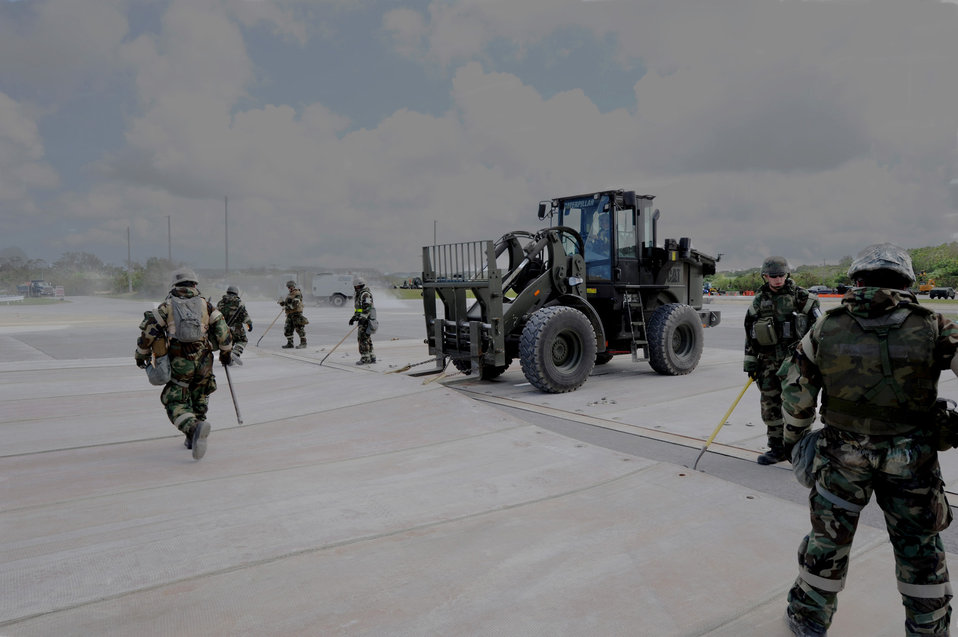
Silver Flag

Civil engineers prepare to lift a fiberglass mat onto a forklift June 28, 2011, during Silver Flag at Kadena Air Base, Japan.